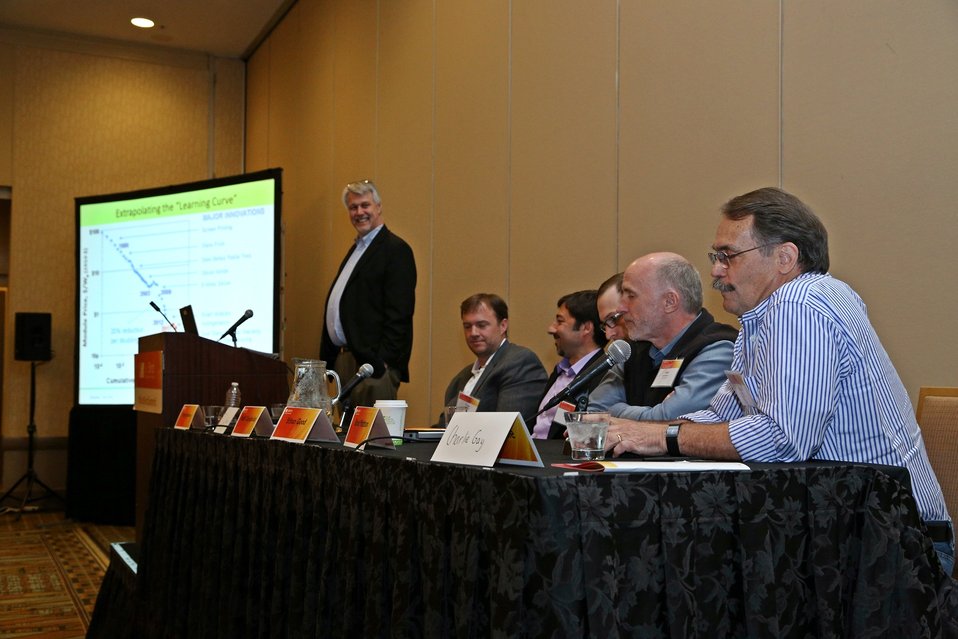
Breakout Sessions 11